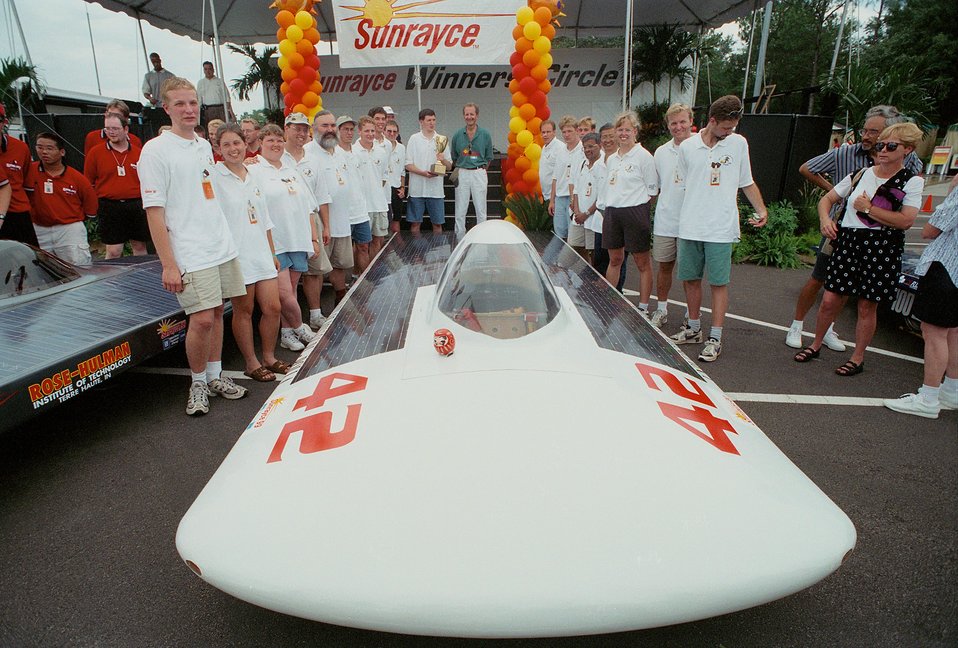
SUNRAYCE 1999 FIRST PLACE WINNING TEAM FROM UNIVERSITY OF MISSOURI-ROLLA, ROLLA, MISSOURI.

SUNRAYCE 1999 STARTED IN WASHINGTON, DC, JUNE 20, 1999 AND WAS COMPLETED ON JUNE 29, 1999 AT DISNEY WORLD IN FLORIDA. DOE HELPS TO SPONSOR THE SUNRAYCE AS PART OF ITS COMMITMENT TO RESEARCH AND DEVELOPMENT OF CLEAN , COST EFFECTIVE, ENERGY EFFICIENT RENEWABLE ENERGY. THE SUNRAYCE BRINGS TOGETHER TEAMS OF STUDENTS FROM A WIDE RANGE OF DISCIPLINES, INCLUDING ENGINEERING, COMPUTER SCIENCE, PHYSICS, MARKETING AND GRAPHICS. STUDENTS MUST DESIGN, CONSTRUCT AND RACE THEIR SOLAR-POWERED VEHICLES, WITH FACULTY ACTING ONLY IN ADVISORY CAPACITY.